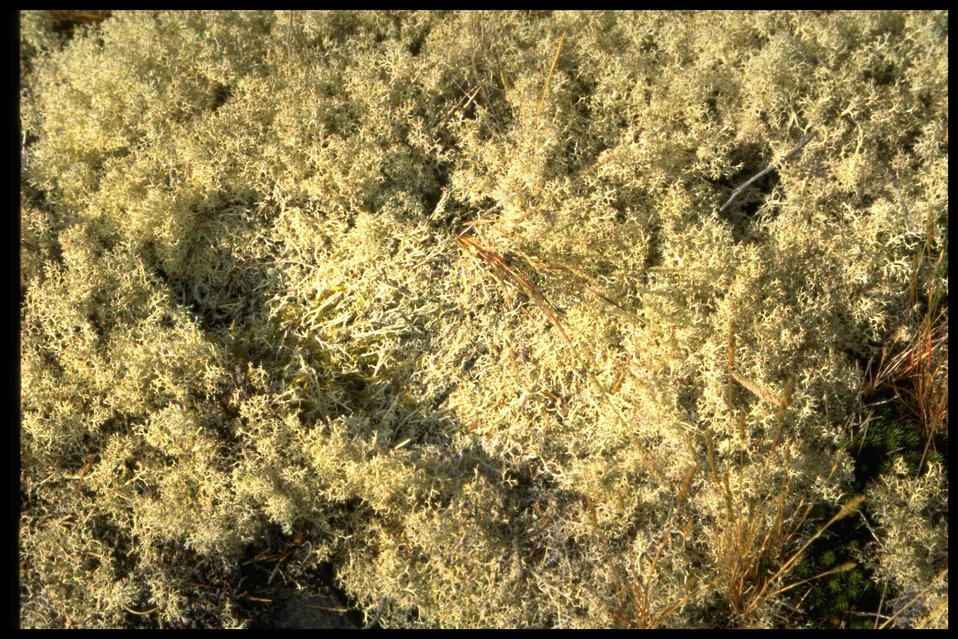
Close up of lichen with a foot print at Point Colville.